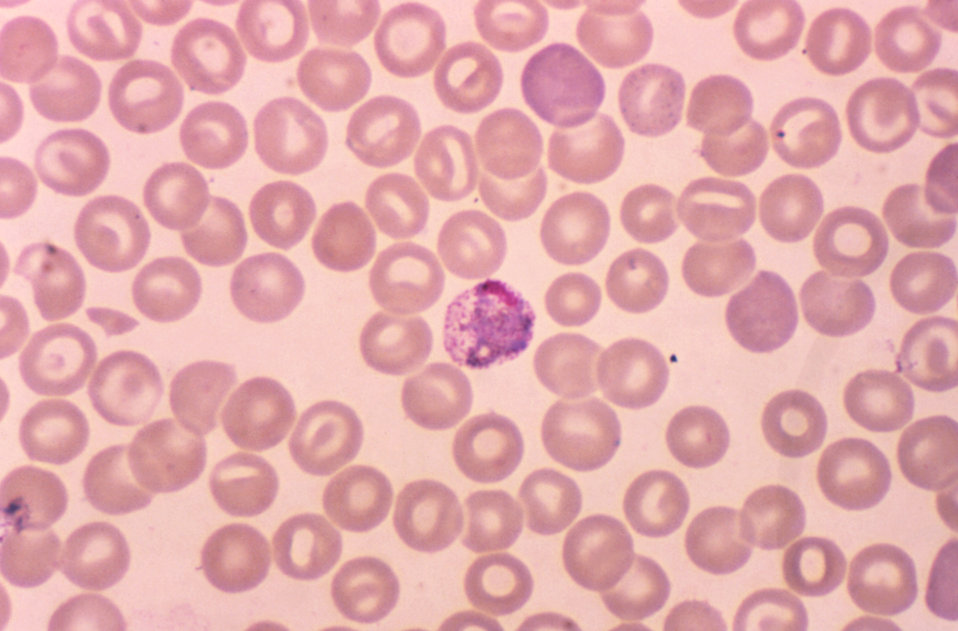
This micrograph contains an ameboid trophozoite of the parasite Plasmodium vivax using Giemsa stain; Magnified 1000x.